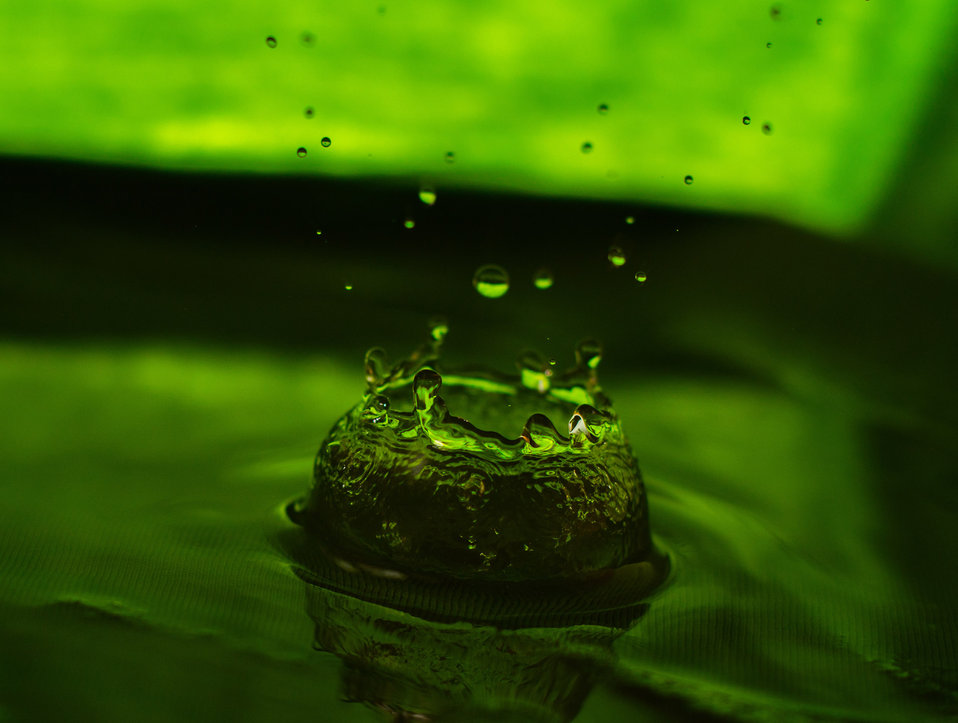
Splash

The drop on its way up..